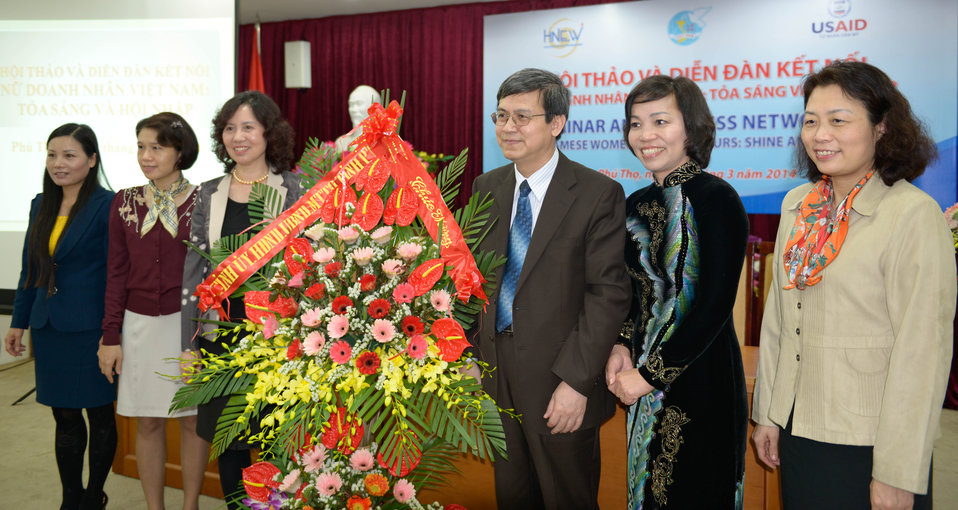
International Women's Day Seminar for female entrepreneurs

Phu Tho, Vietnam. March 1, 2014.